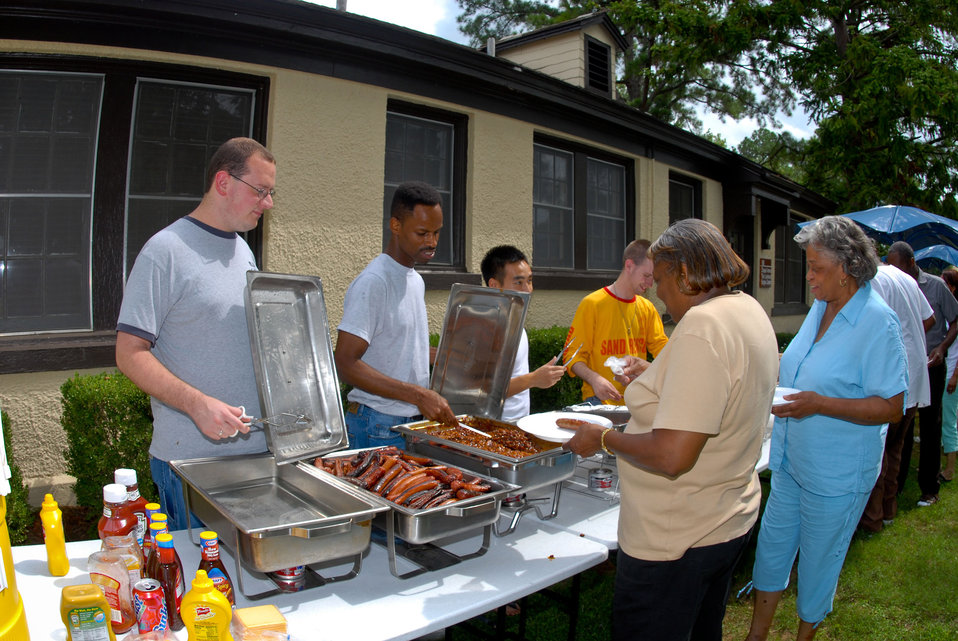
Maxwell officials provide shelter for Gustav evacuees

Staff members from the 42nd Air Base Wing base chapel serve lunch Sept. 1 to Hurricane Gustav evacuees staying on Maxwell Air Force Base, Ala. The chapel staff served food to about 150 of the more than 650 military and family members and government employees who evacuated to Maxwell from the Gulf Coast.